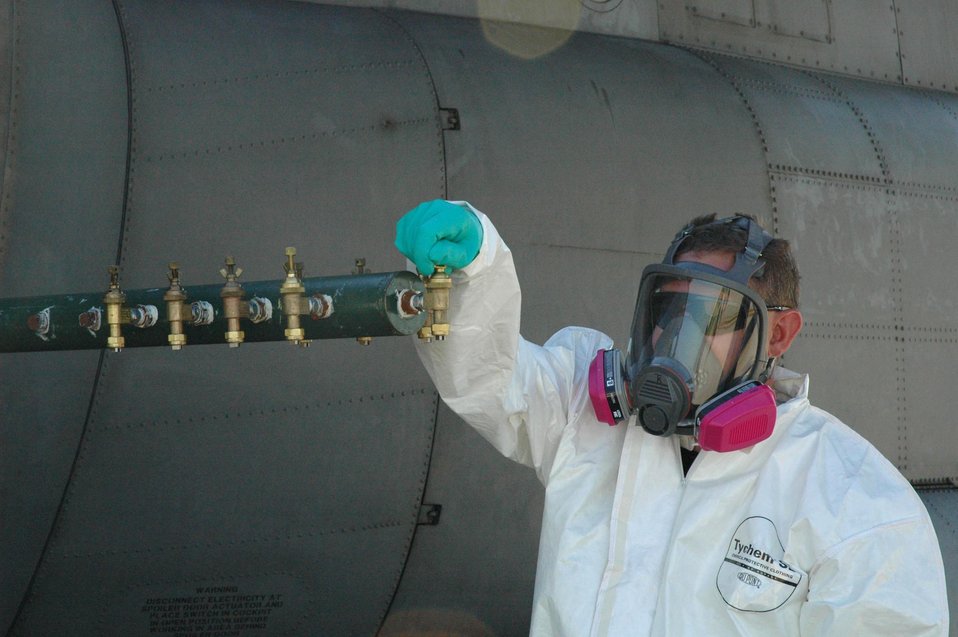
Mosquito assault

MINOT AIR FORCE BASE, N.D. -- Staff Sgt. Tom Kocis performs a preflight nozzle inspection on a C-130 Hercules spraying system. The 757th Airlift Squadron's Airmen conducted aerial spraying here and the local community July 19 and 20 to reduce and control the mosquito population. The Airmen are from Youngstown Air Reserve Base, Ohio.